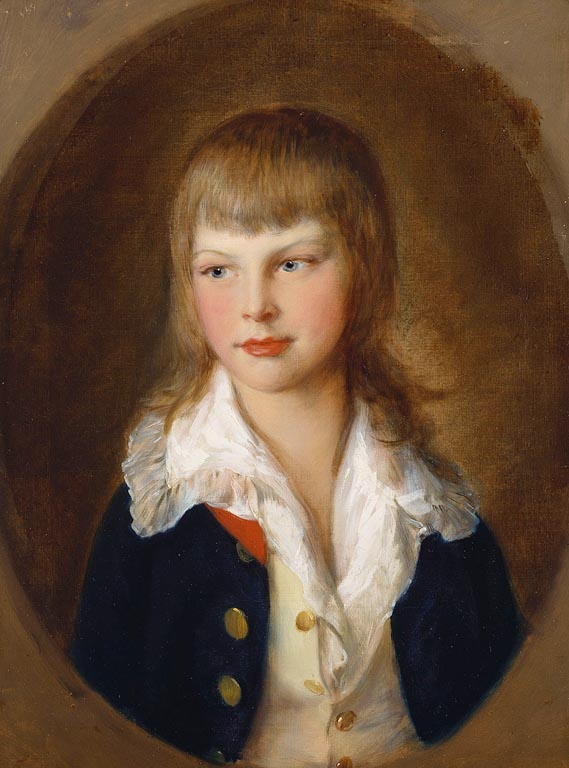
Gainsborough - Prince Augustus, 1782